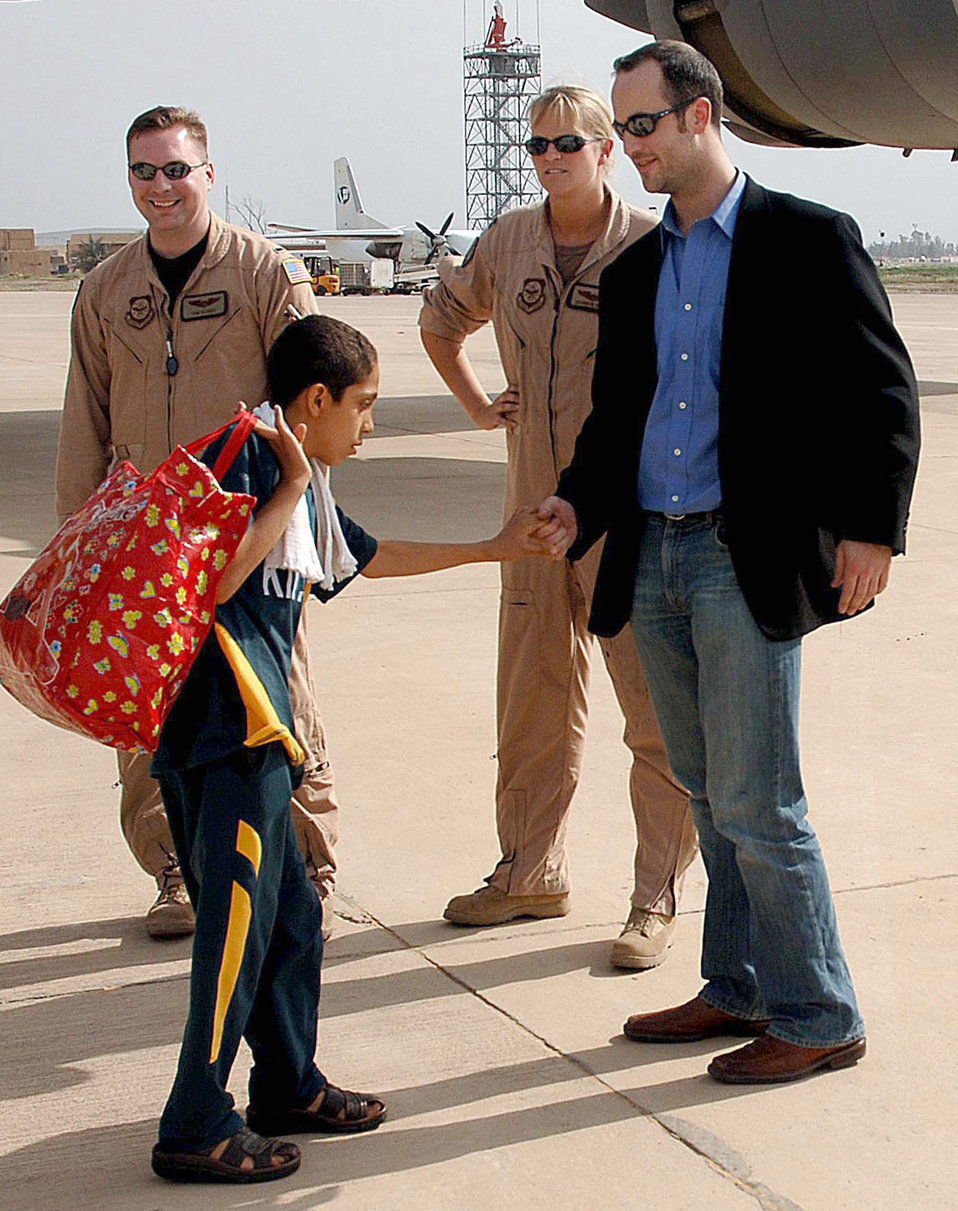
Operation Smile

An Iraqi boy thanks Chris Anderson of Operation Smile upon arriving at Baghdad International Airport, Iraq, on Saturday, April 29, 2006. Operation Smile provides corrective surgery for cleft palates and cleft lips. The program provided surgery in Amman, Jordan, to more than 100 Iraqi children. They were flown back to Iraq on an Air Force C-17 Globemaster III.